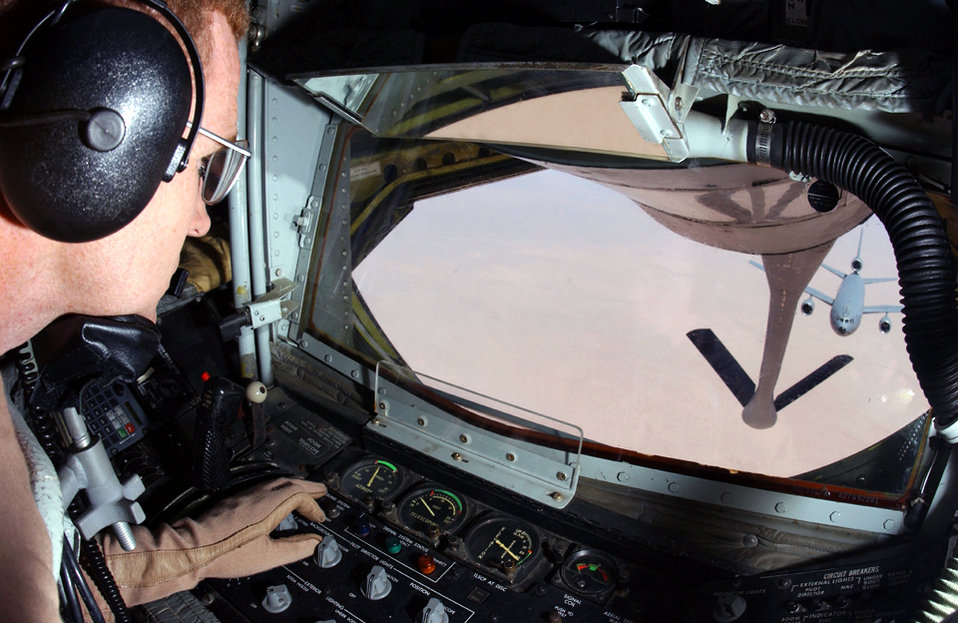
Tanker fuels tanker

OPERATION IRAQI FREEDOM -- Master Sgt. Sam Blackwell prepares to transfer fuel to a KC-10 Extender. He is a boom operator on a KC-135 Stratotanker deployed from Pease Air National Guard Base, N.H.